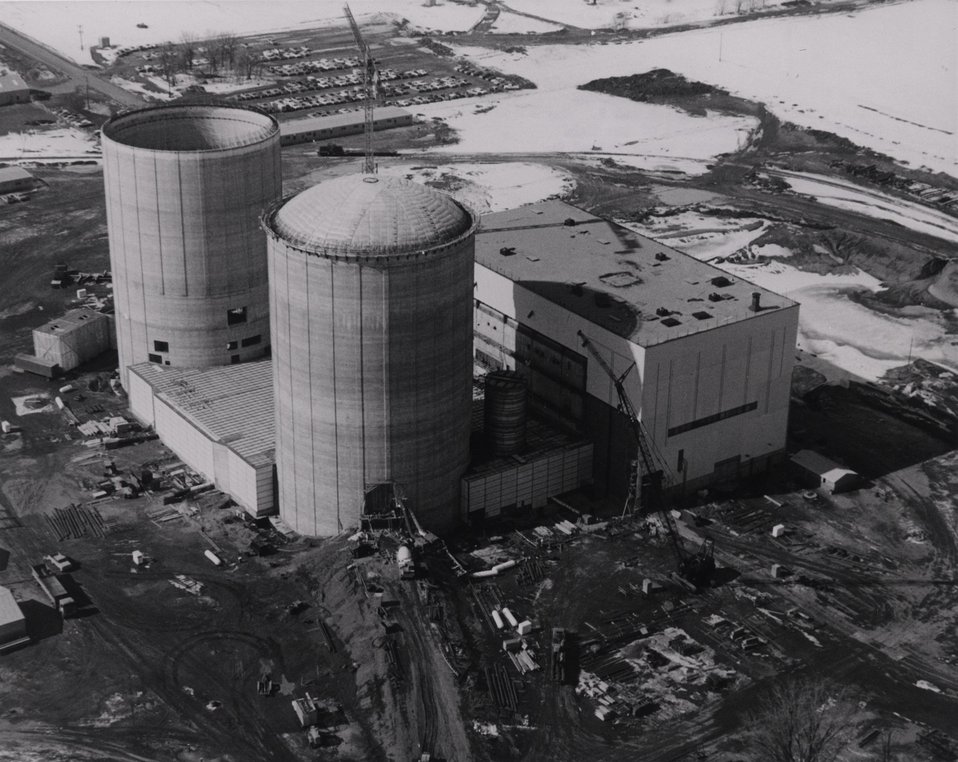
Aerial view of Prairie Island Nuclear Generating Plant Units 1 and 2, February 1970.